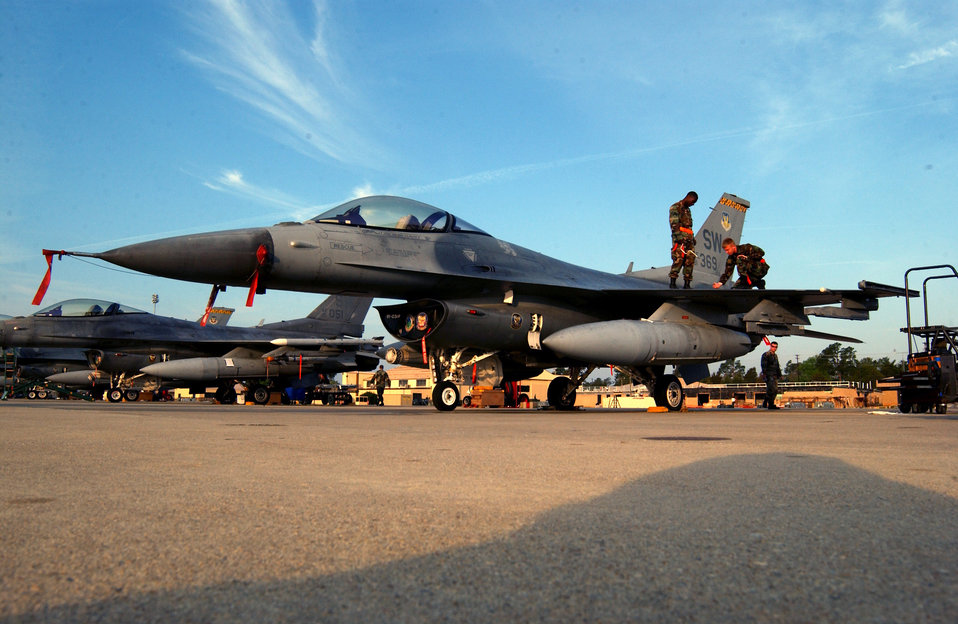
Prepare for launch

Crew chiefs with the 79th Aircraft Maintenance Unit prepare an F-16 Fighting Falcon to be launched during an operational readiness exercise March 27 at Shaw Air Force Base, S.C. Exercises prepare Airmen for future deployments.